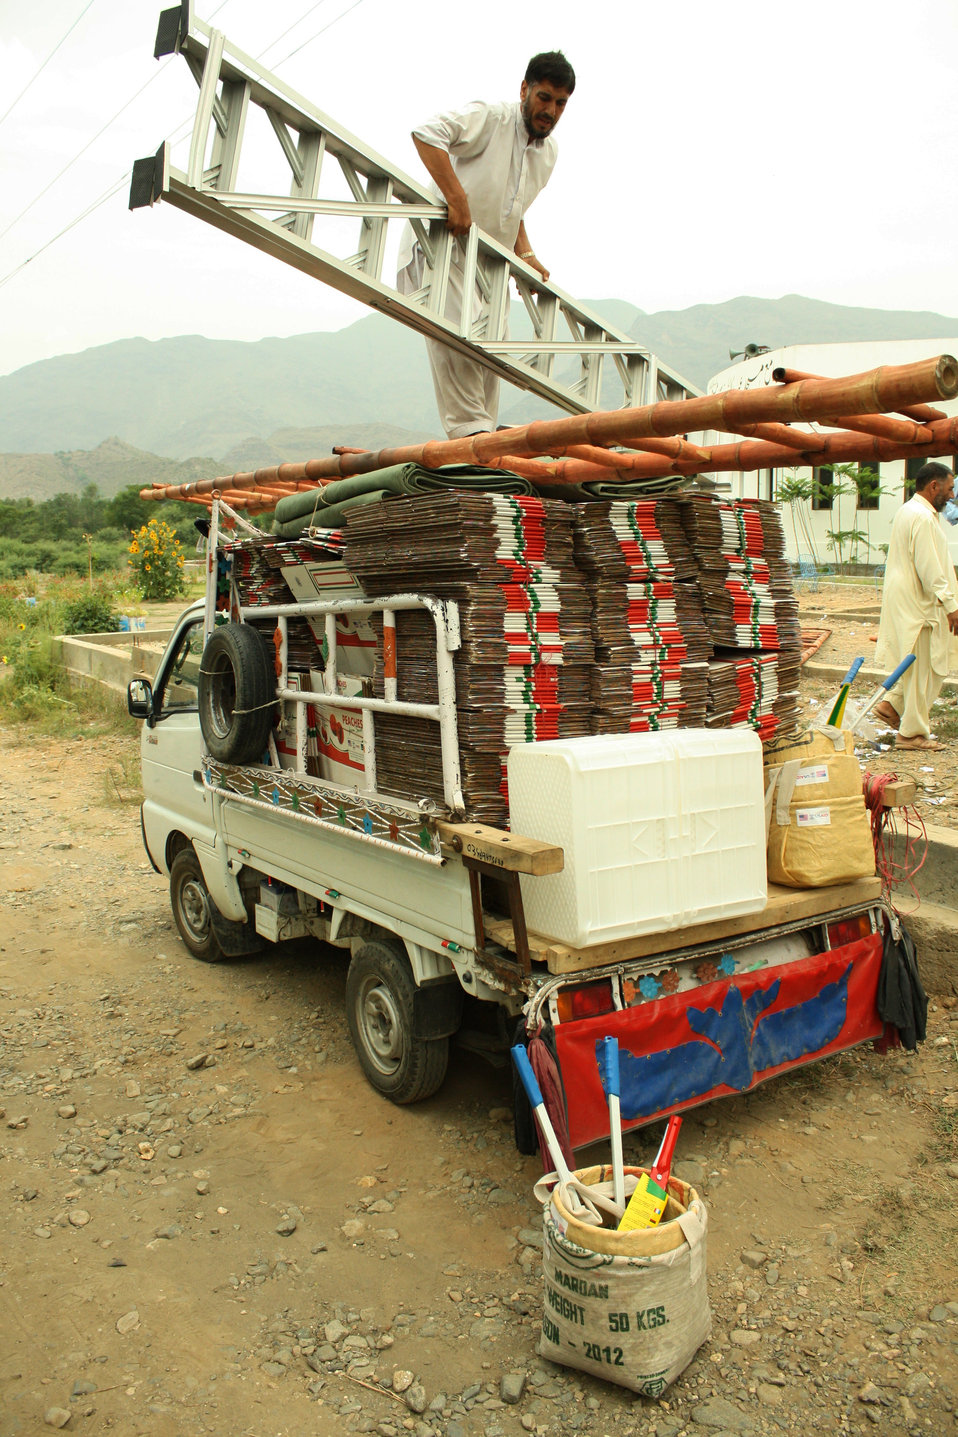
4. In-kind support in the form of pruning kits, harvesting kits and corrugated cartons have been provided to farmers to ensure minimum damage to fruit during harvesting